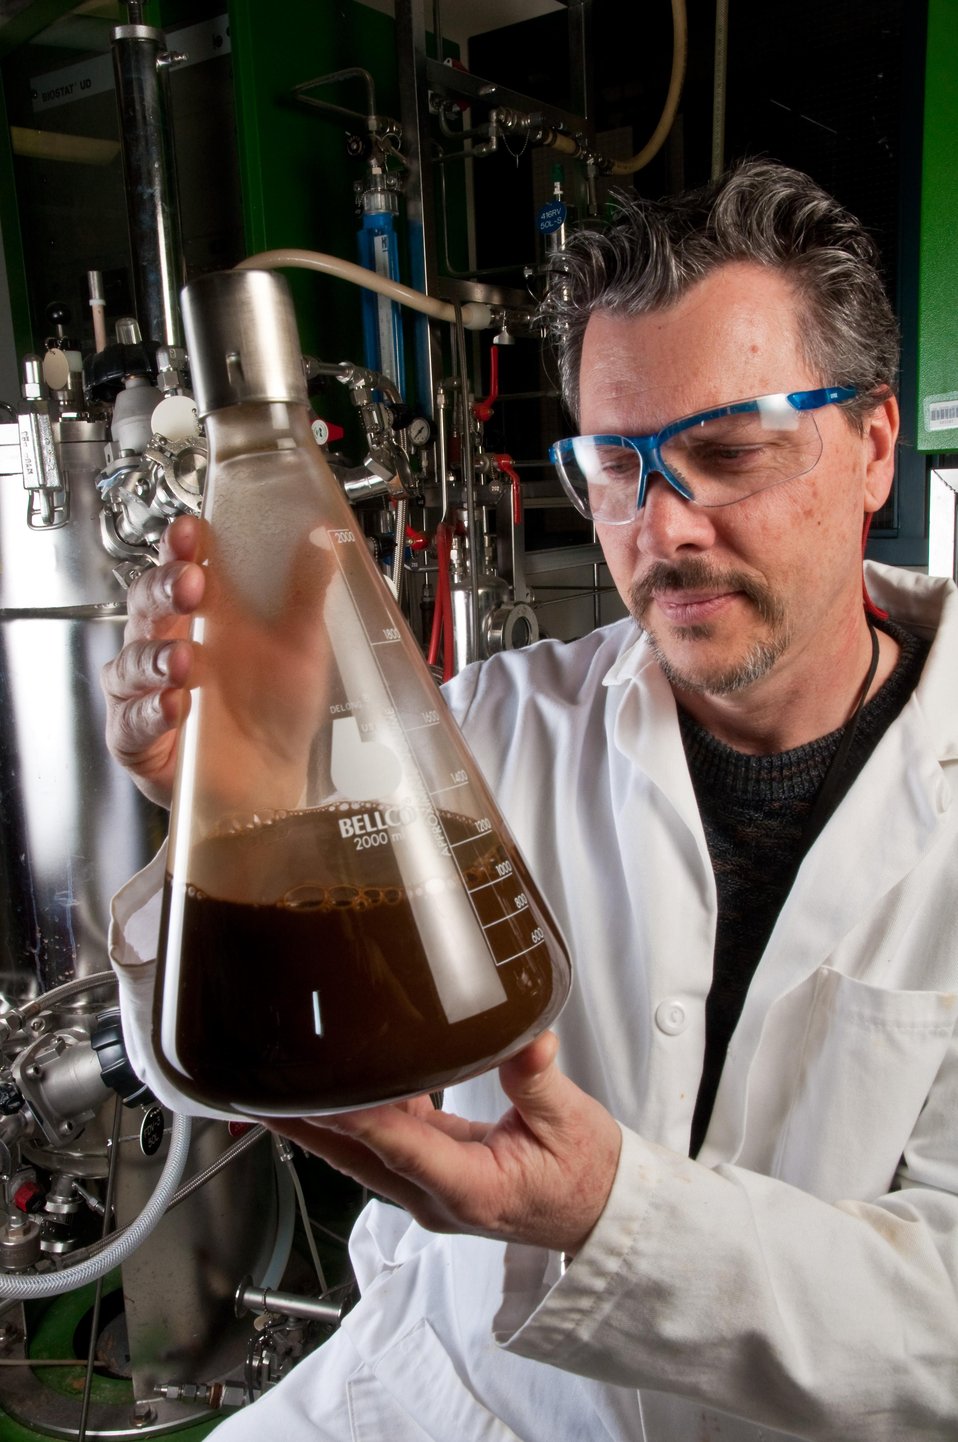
NREL INVESTIGATOR HOLDS A FLASK OF BEER - A LIGNOCELLULOSIC ETHANOL BROTH - THAT REPRESENTS A MIDDLE STAGE IN THE PROCESS OF MAKING HIGH-GRADE ETHANOL FUEL NON-EDIBLE BIOMASS.